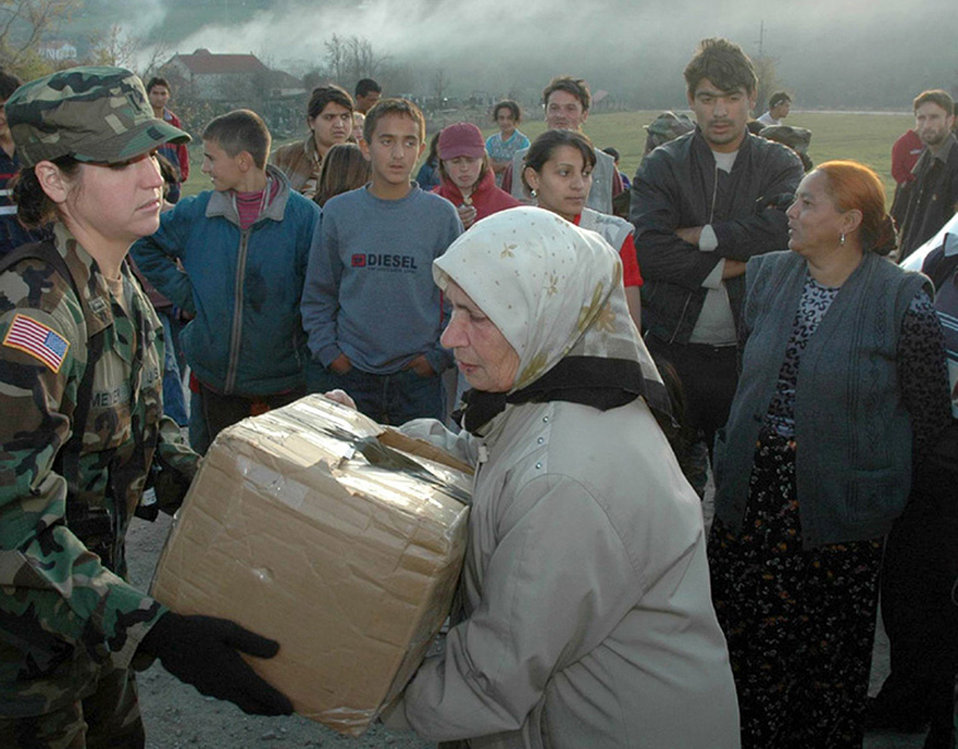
Humanitarian mission

NOVO BRDO, Kosovo (AFPN) -- 1st Lt. Melanie Meyer gives a box of items to a resident of Novo Brdo during a U.S. forces humanitarian mission. Lieutenant Meyer is in charge of coordinating the monthly missions. She is the Headquarters Kosovo Force Public Information Liaison Officer.